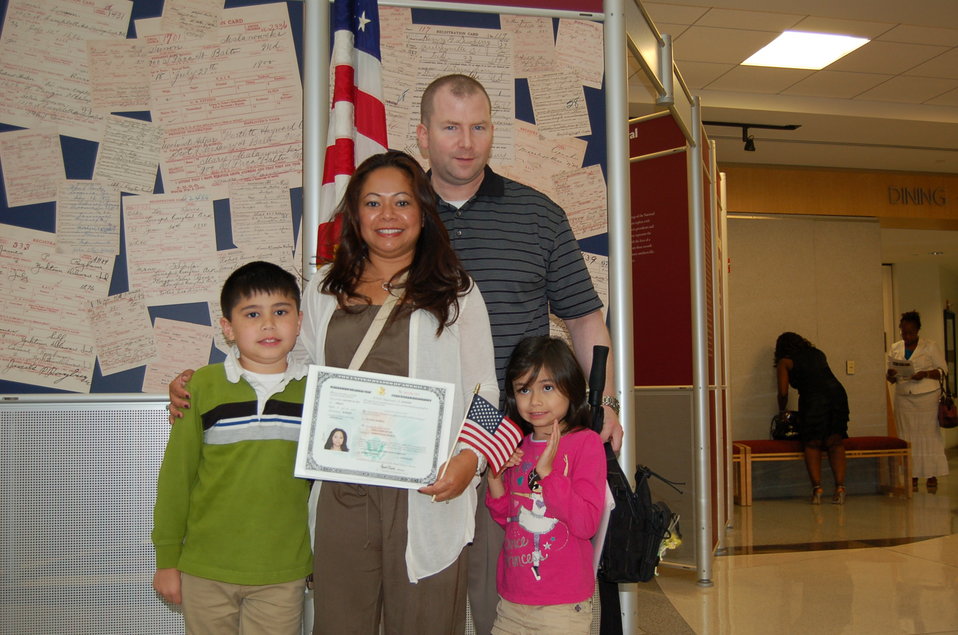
New Citizens